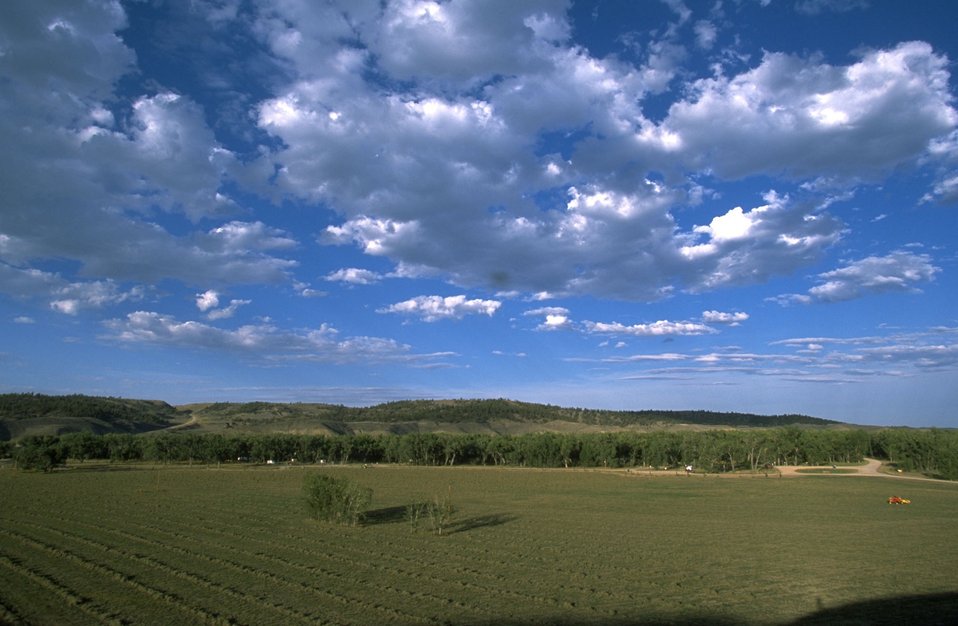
Kipp Recreation Area